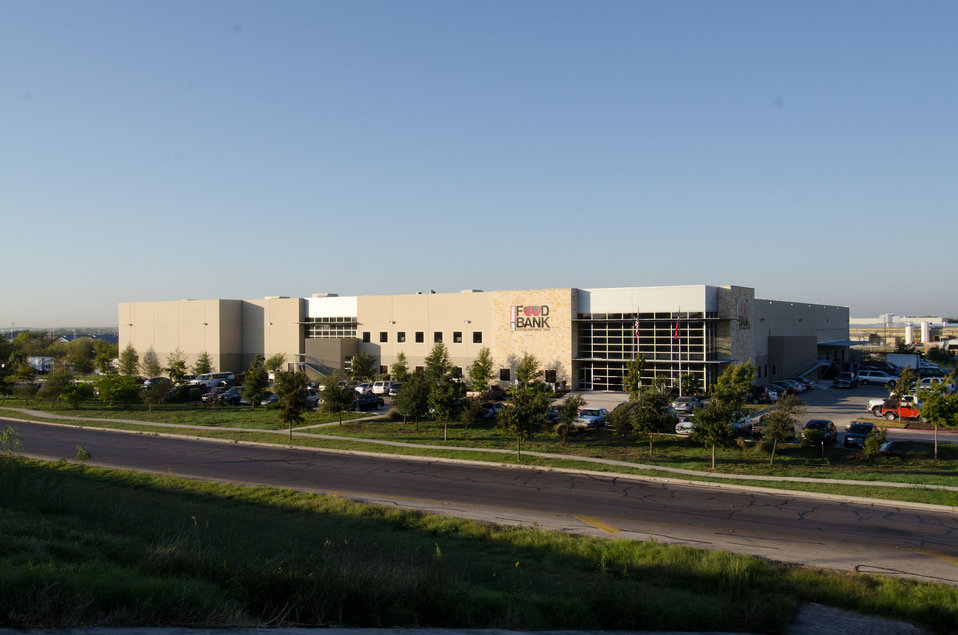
The San Antonio Food Bank (SAFB) is a non-profit organization that serves as a clearinghouse by receiving and storing truckloads of donated food, produce, and other grocery products in San Antonio TX, on Monday, October 31, 2011. SAFB distributes these items to over 500 service agencies that help people in need.
“We couldn’t do what we do without our partnership with USDA’” said President and CEO Eric Cooper. He continues, “We are privileged in partnering (with the USDA) to feeding kids, through the summer, with the Summer Food Service Program, and throughout the year, with the Child and Adult Care Feeding Program (CACFP). Then in our approach to feeding seniors, we partner with USDA in the Commodities Supplemental Food Program (CSFP), and the Senior Farmer’s Market (Nutrition) Program. And then work to bring all our (needy) parties together with our Supplemental Nutrition Assistance Program (SNAP) Outreach. You know, once families have access to food we believe it is important to educate them. Through the support of the SNAP-Education Program we are able to educate them during their time of need. With this comprehensive approach we are really able to get the right food, at the right amount, at the right time, to needy families throughout our community – which allows us to feed the fifty-eight thousand we do, each week.”
SAFB serves 16 counties in Southwest Texas and states, “Nearly one out of every four children and one out of every five adults in Southwest Texas lives in poverty and has difficulty meeting basic nutritional needs.” According to SAFB, sixty-five percent of the people requesting emergency food have children. “Additionally, the senior citizens and those living on a fixed income generally have limited funds for a consistent grocery budget.”
San Antonio is the seventh largest city in the nation with surrounding farms and ranches near its rivers and water supplies. When available they provide fresh surplus produce. Other commodities come from the food industry and manufacturers. The major food brand companies that for various reasons have surplus commodities donate it to SAFB.
The United States Department of Agriculture donates commodities through programs such as The Emergency Food Assistance Program (TEFAP), while Texas farmers supply fresh produce to their Fresh Produce Program.
Public donations come in the form of money, food, volunteer time, and advocacy. Their fleet of trucks to pickup and deliver food as needed.